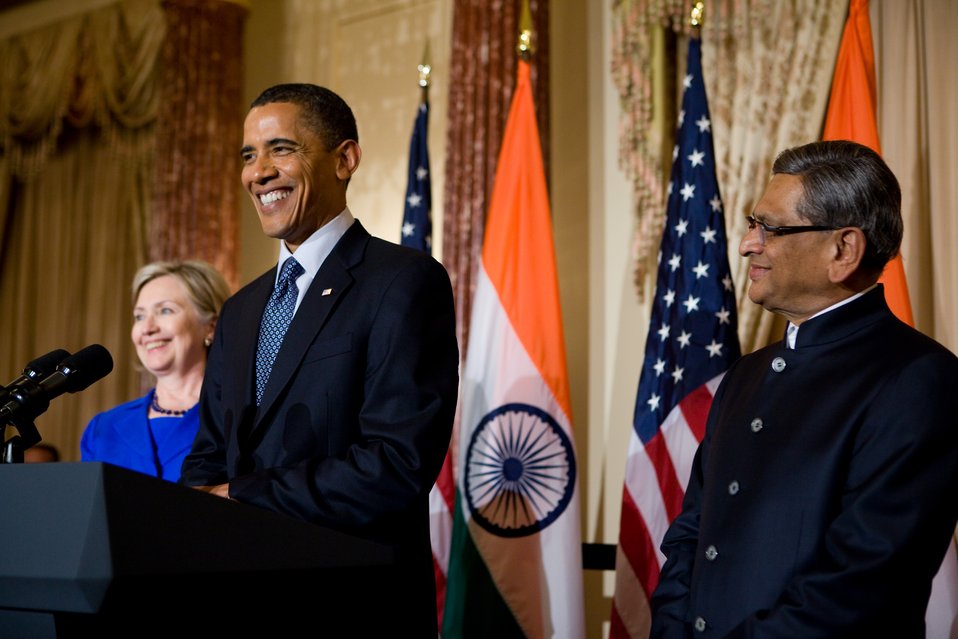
President Obama Delivers Remarks

U.S. President Barack Obama delivers remarks with U.S. Secretary of State Hillary Rodham Clinton (left), and Indian Minister of External Affairs S.M. Krishna (right), at the U.S.-India Strategic Dialogue reception at the U.S. Department of State in Washington, D.C., on June 3, 2010.